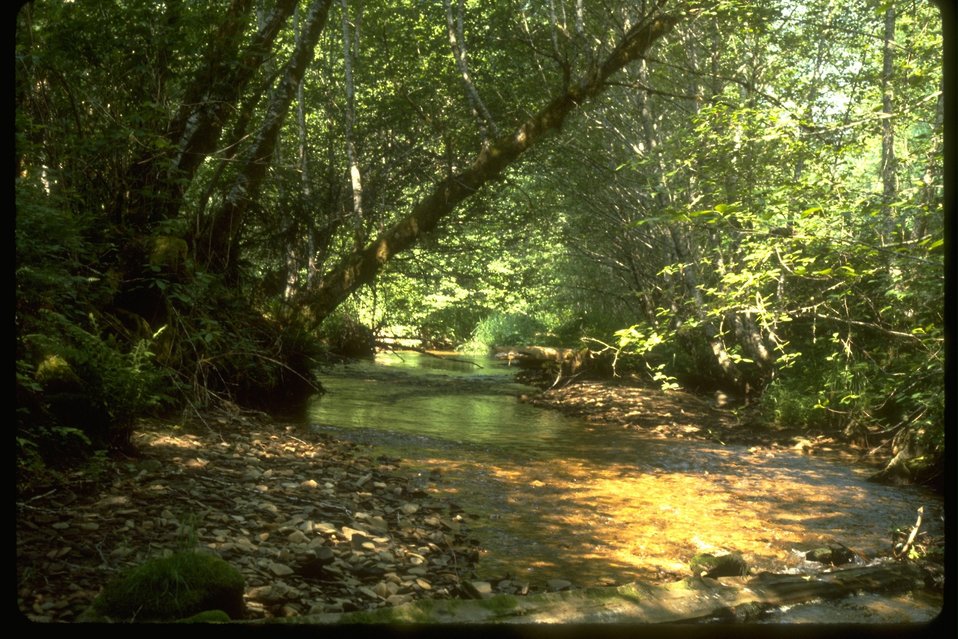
Fish Spawning Habitat